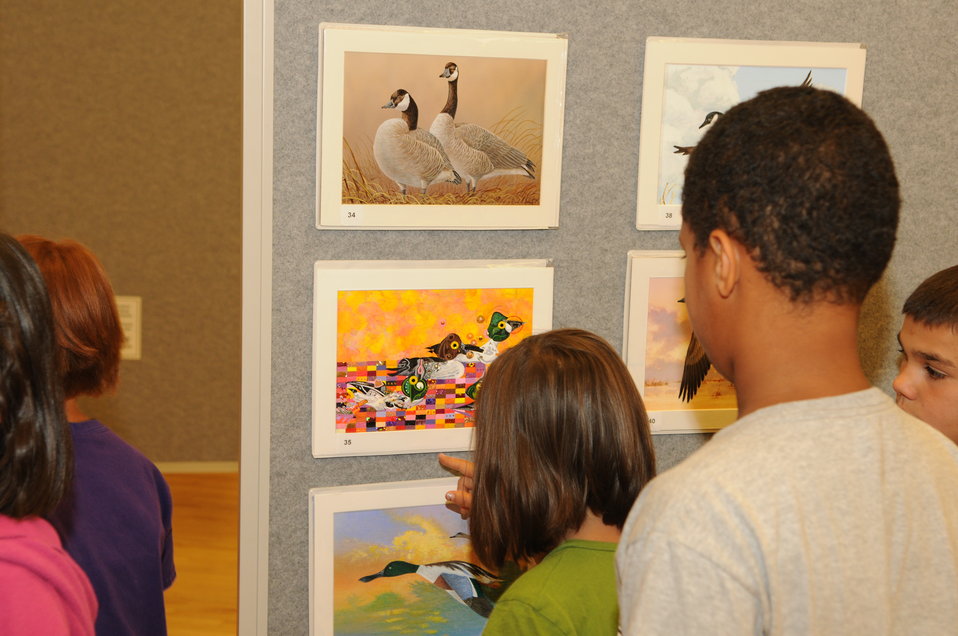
Youth Outreach

The U.S. Fish & Wildlife Service sponsored the 2012 Federal Duck Stamp Art Contest September 28 and 29 in Ogden, Utah, at Weber State University. A panel of five judges was responsible for choosing the art work used to design the 2013-2014 Migratory Bird Hunting and Conservation Stamp.